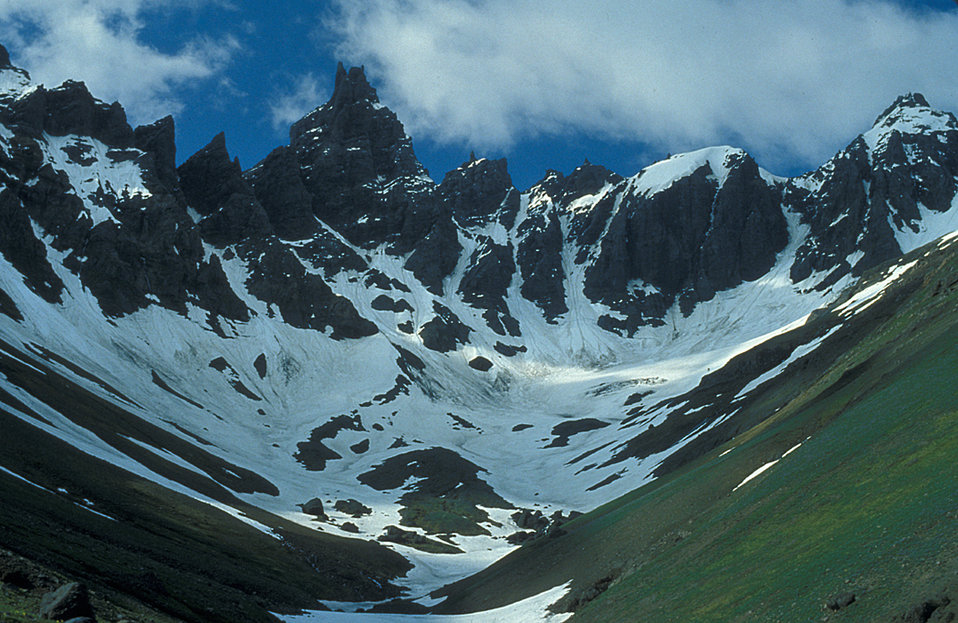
Aerial view of the Aghileen Pinnacles, Lefthand Valley, Wilderness Area, Alaska.